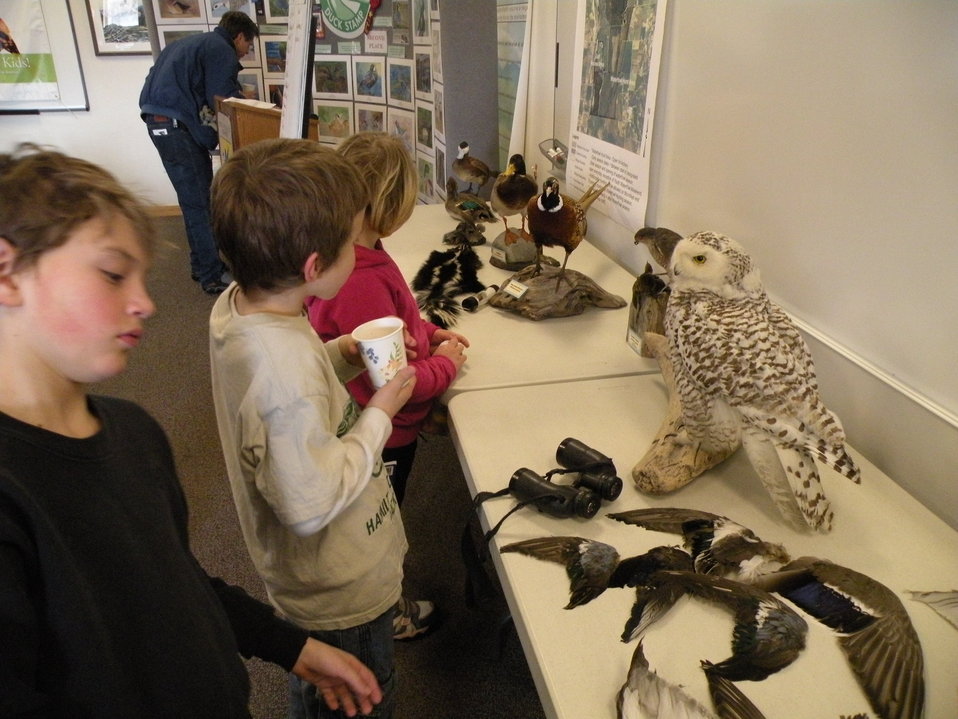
Lee Metcalf National Wildlife Refuge

Christmas Bird Count for Kids (CBC4Kids), created by sonomabirding.com is a way to connect kids with nature and to learn how to identify and count birds. This is the first year Lee Metcalf National Wildlife Refuge has participated in the fun! Not only did they go out and count birds but the refuge provided several mounted birds for the children to identify and become more familiar with.